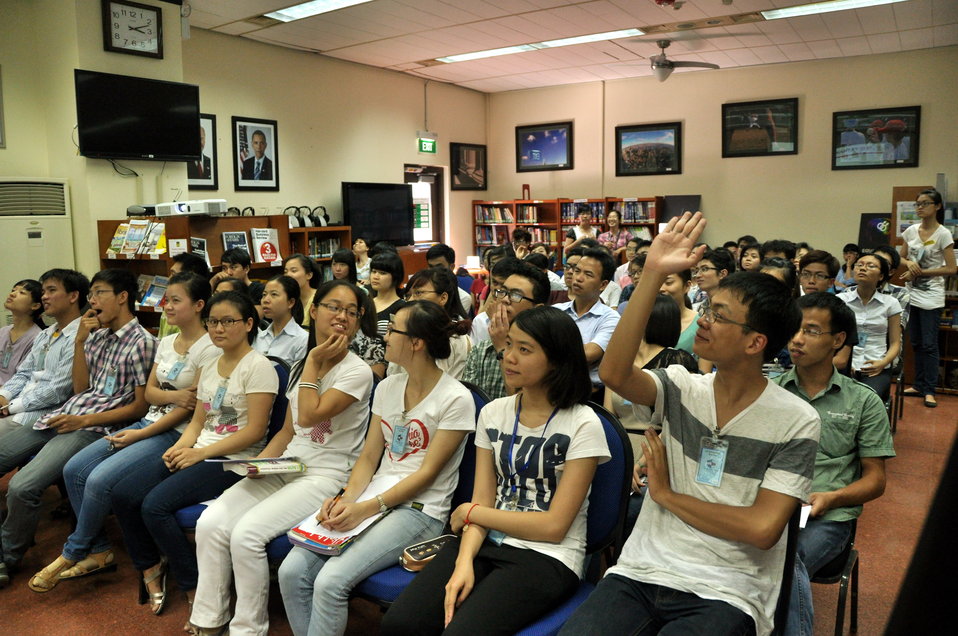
Climate Change Talk at the American Center

Hanoi, May 28, 2013.